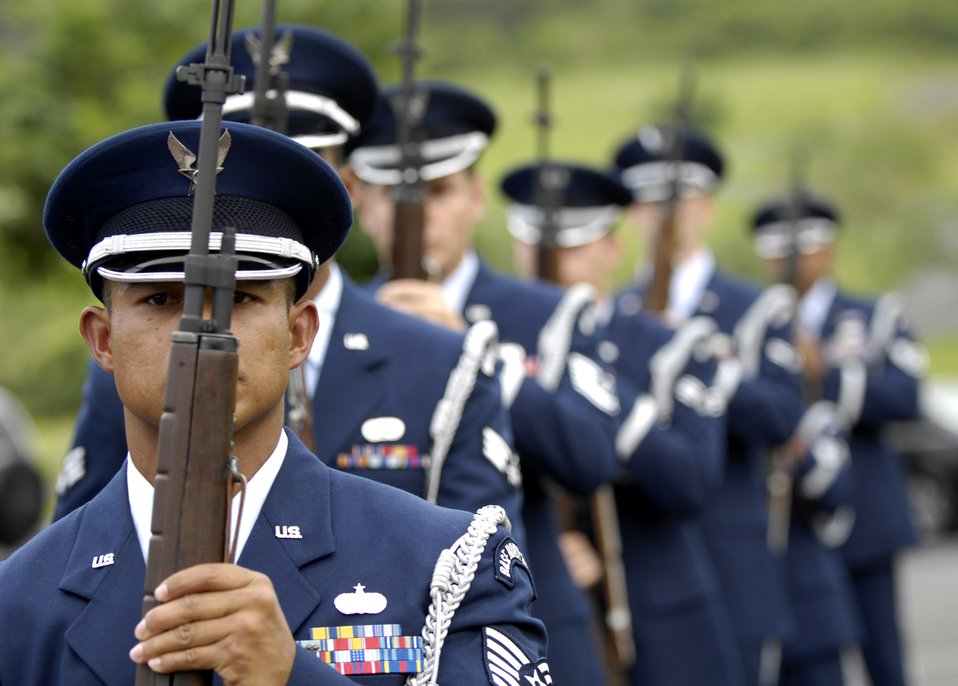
Rendering military honors for a veteran

Members of the 15th Airlift Wing Honor Guard at Hickam Air Force Base, Hawaii, prepare to fire a volley Oct. 26 during a veteran's funeral at Hawaii Veterans Cemetery. The base honor guard is rendering military honors to the veteran and his family.